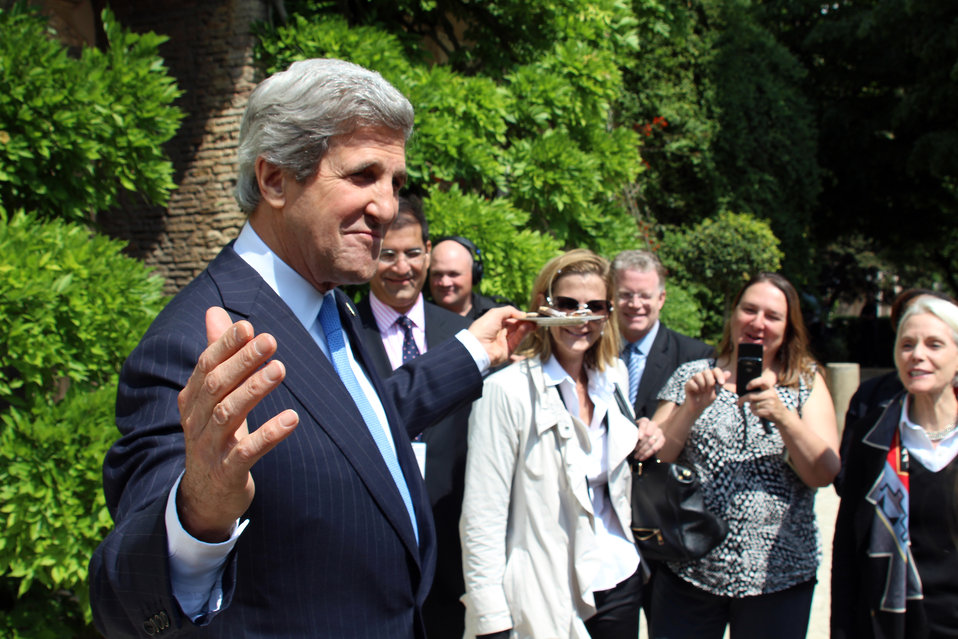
Secretary Kerry Shares Italian Cookies With the Traveling Press Corps

U.S. Secretary of State John Kerry shares a plate of Italian cookies with his traveling press corps after enjoying some himself at the U.S. ambassador's residence, the Villa Taverna, in Rome, Italy, on May 8, 2013.